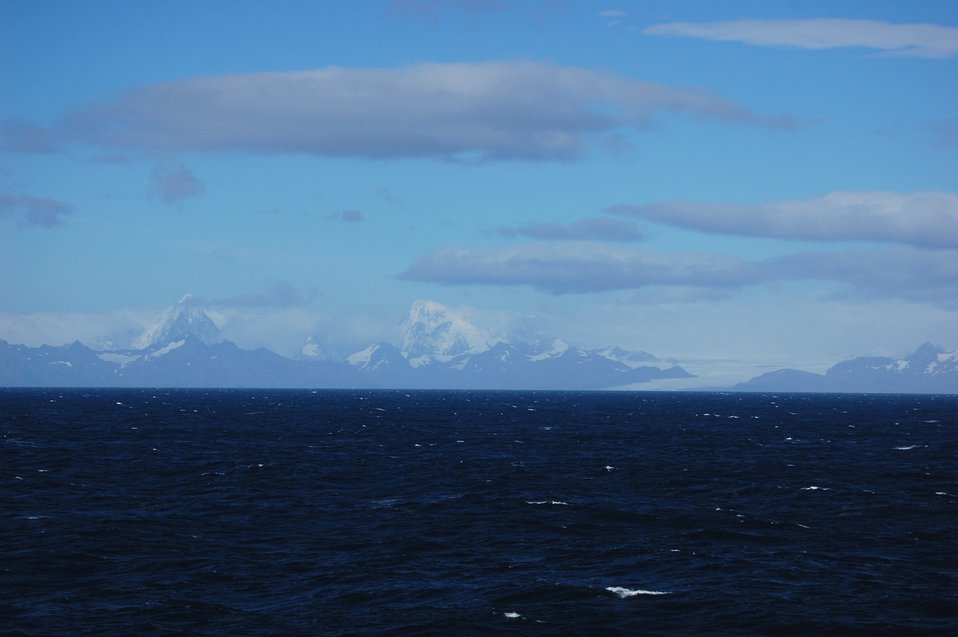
South Georgia Island as seen from the NOAA Ship RON BROWN